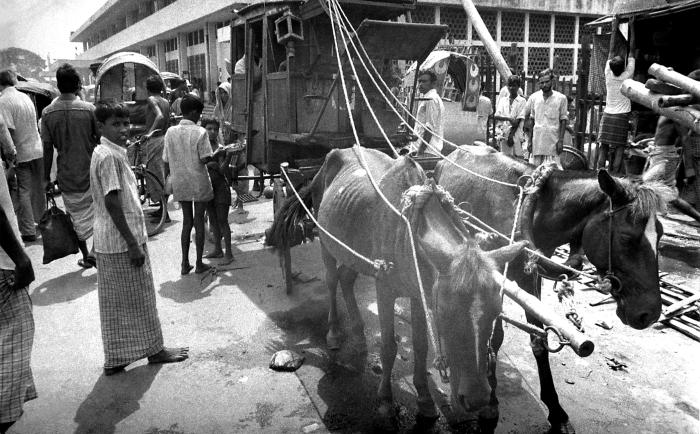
This photograph depicted a typical Bangladesh street scene in the port of Sadarghat, in the capital city of Dhaka that included a mule-drawn carriage, men loading trucks, and rickshaws in the background. This photograph provided by Dr. Stan Foster, and captured by Pierre Claquin, M.D., B.A.C., who at the time was a member of the World Health Organization's Smallpox Eradication Program. It was part of a series photographed by former E.I.S. officer, Stanley O. Foster M.D., M.P.H., and was one of a series entitled 'The Story of One Smallpox Jeep', which depicted the travails faced by the jeep, and its occupants of public health practitioners, as they road through the Bangladesh countryside in an attempt to eradicate smallpox from the country.